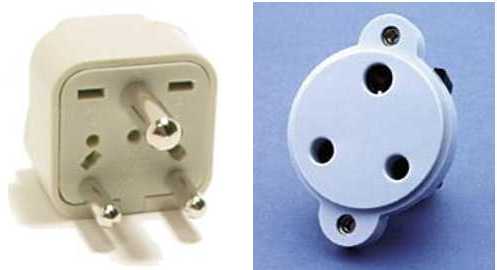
D plug